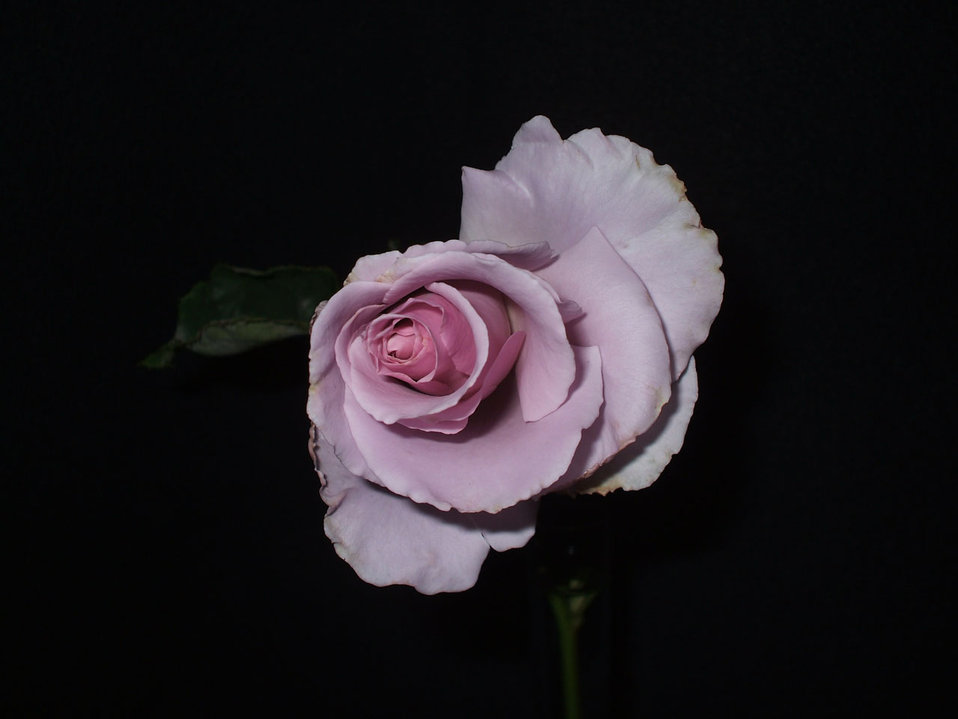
Ros sterling rose

Sterling rose in a vase.